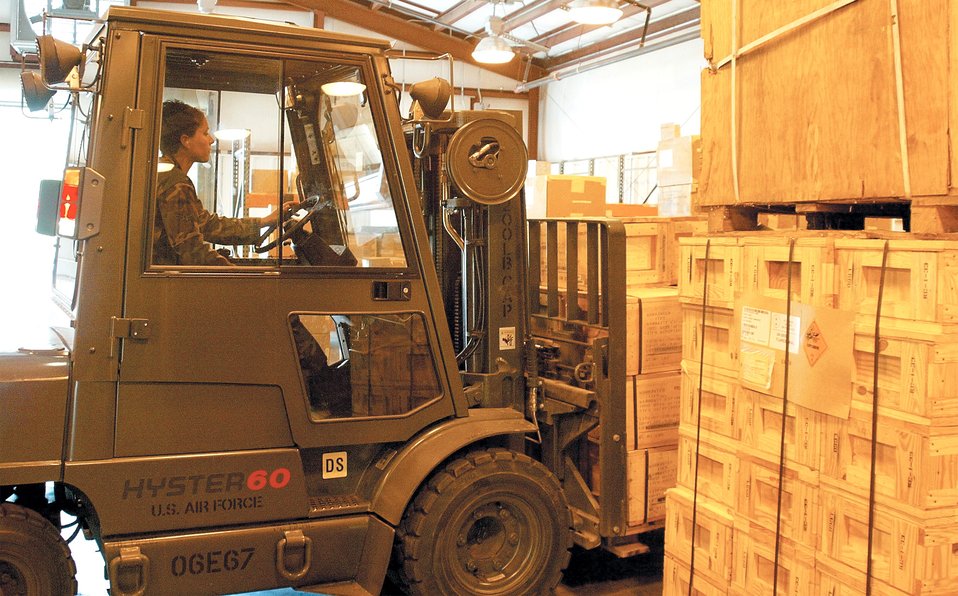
Munitions distribution involves detailed accuracy

Airman 1st Class Amy Huff moves munitions inside a storage igloo at the bomb dump at Pope Air Force Base, N.C., on Monday, April 24, 2006. Airman Huff is assigned to the 23rd Maintenance Squadron.